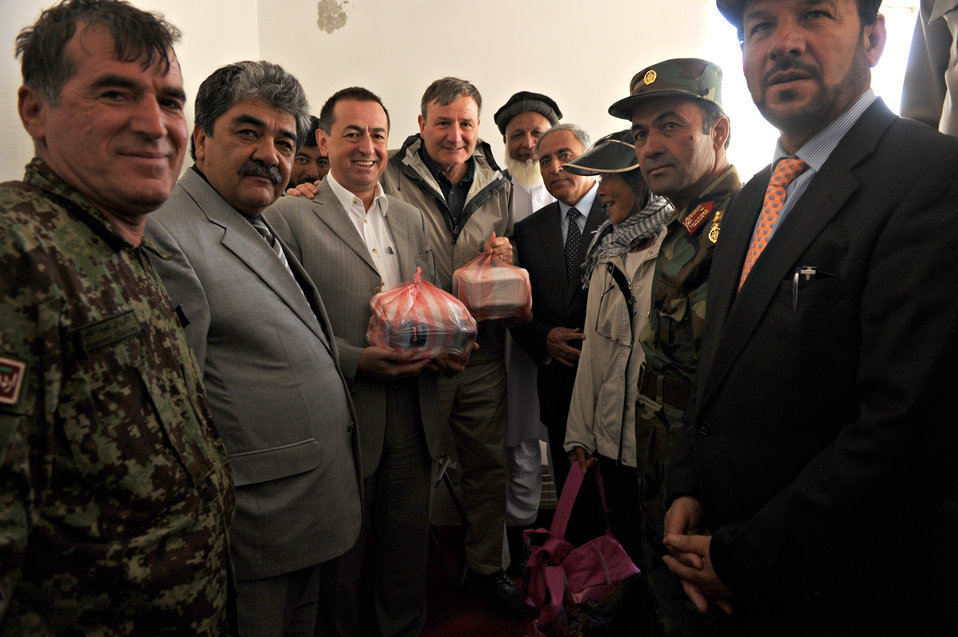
U.S. Ambassador Karl W. Eikenberry attends a ceremony to mark the beginning of renovations at the Salang Tunnel on the border of Parwan and Baghlan Provinces, Afghanistan, on Wednesday, June 15, 2011. (S.K.Vemmer/Department of State)